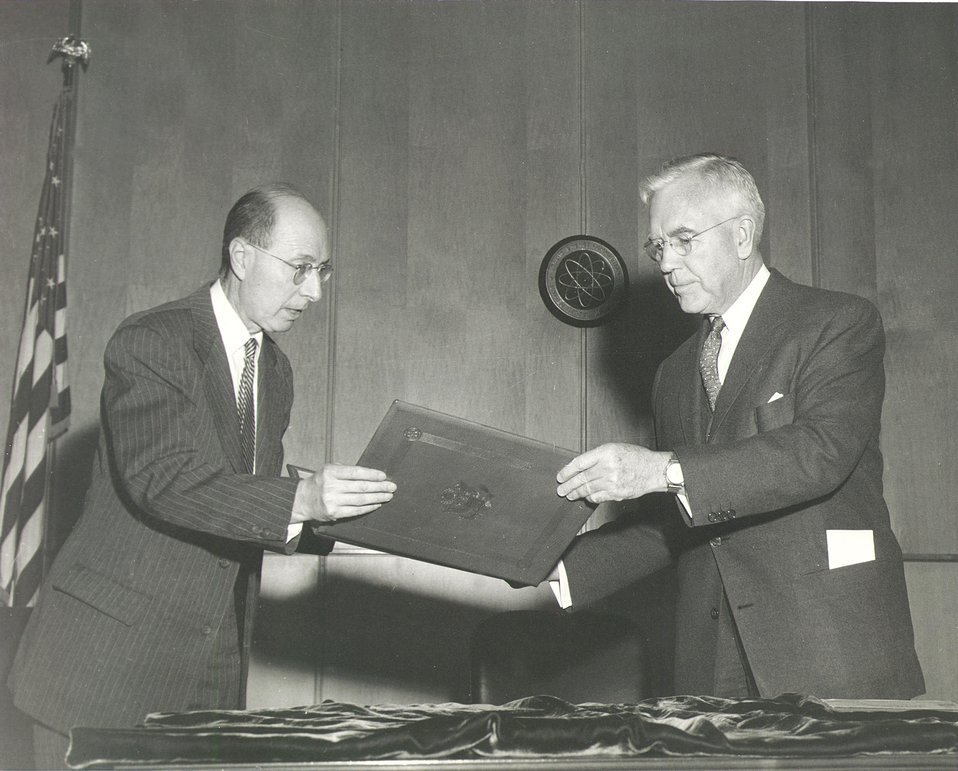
Eugene P. Wigner. 1958. L to R- Eugene P. Wigner and AEC Chairman John McCone.